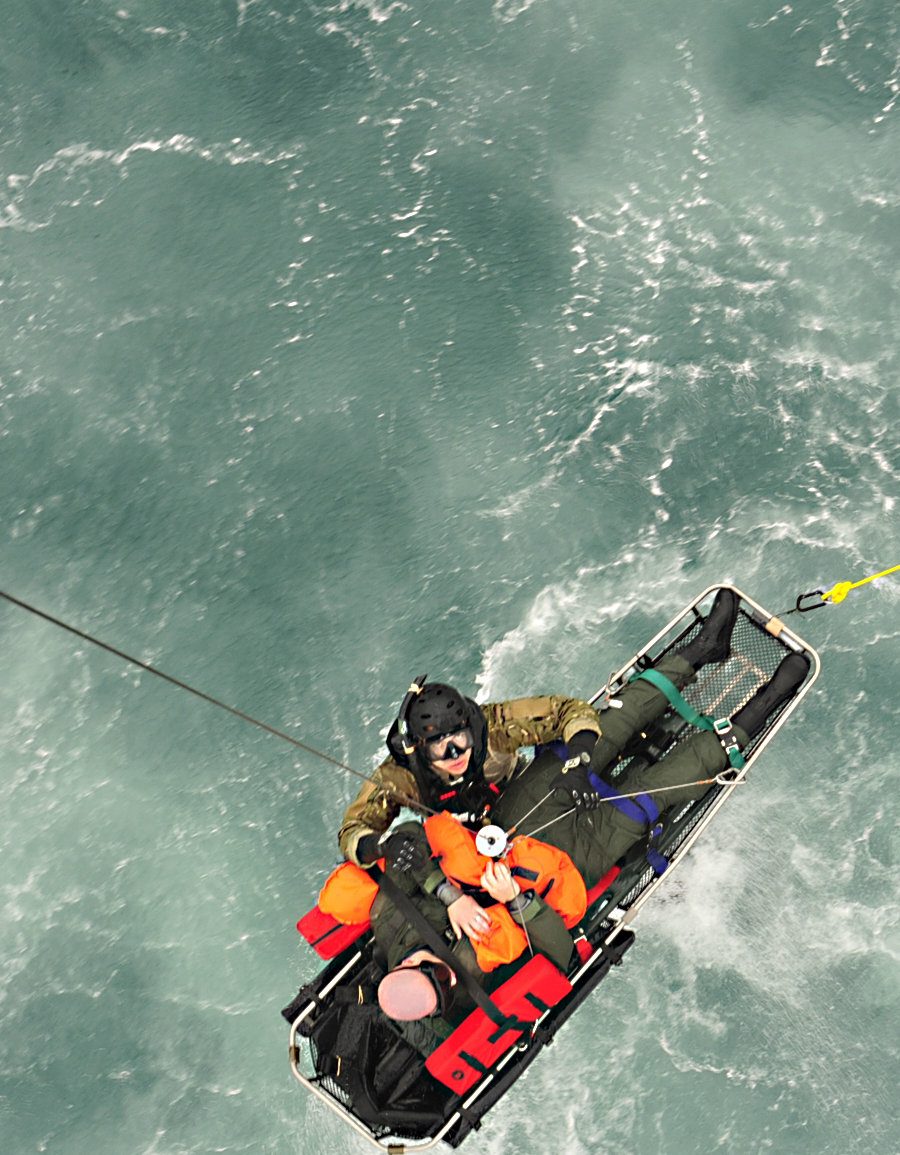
Going up!

Staff Sgt. Jacob Schaumberg